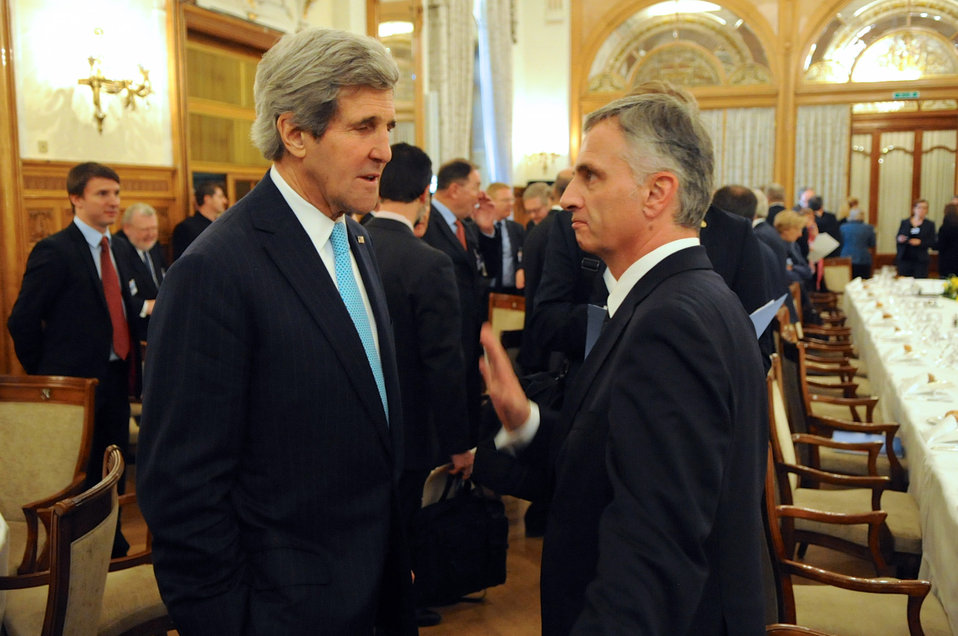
Secretary Kerry Chats With Swiss Federation President Burkhalter at Geneva II Conference

U.S. Secretary of State John Kerry chats with Swiss Federation President Didier Burkhalter before a delegates luncheon at the Geneva II conference in Montreux, Switzerland, on January 22, 2014.